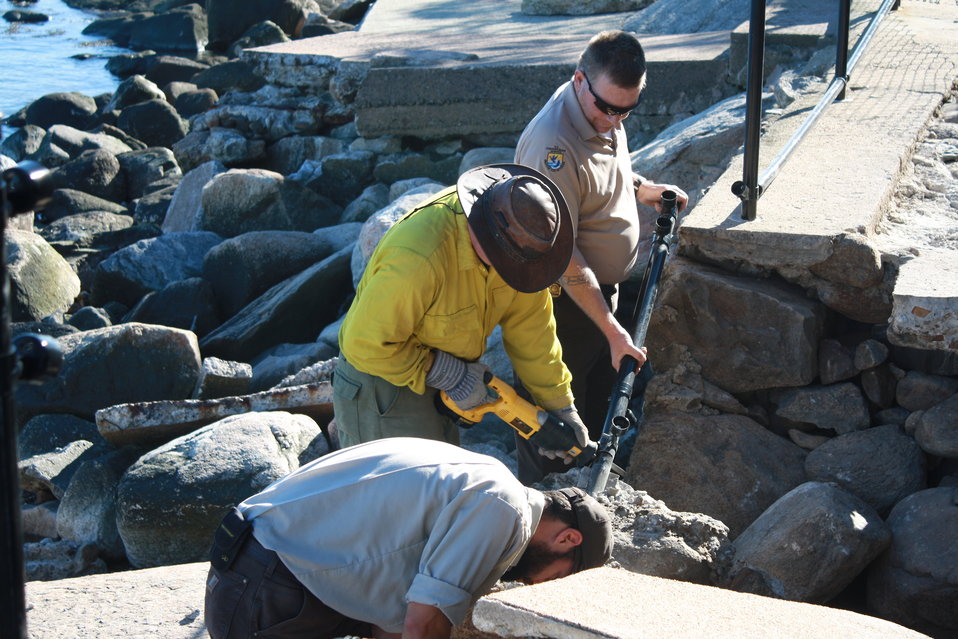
Beginning repairs at Stewart B. McKinney National Wildlife Refuge (CT)

Refuge staff and crew members working to repair a damaged fence on Outer Island after Hurricane Sandy.